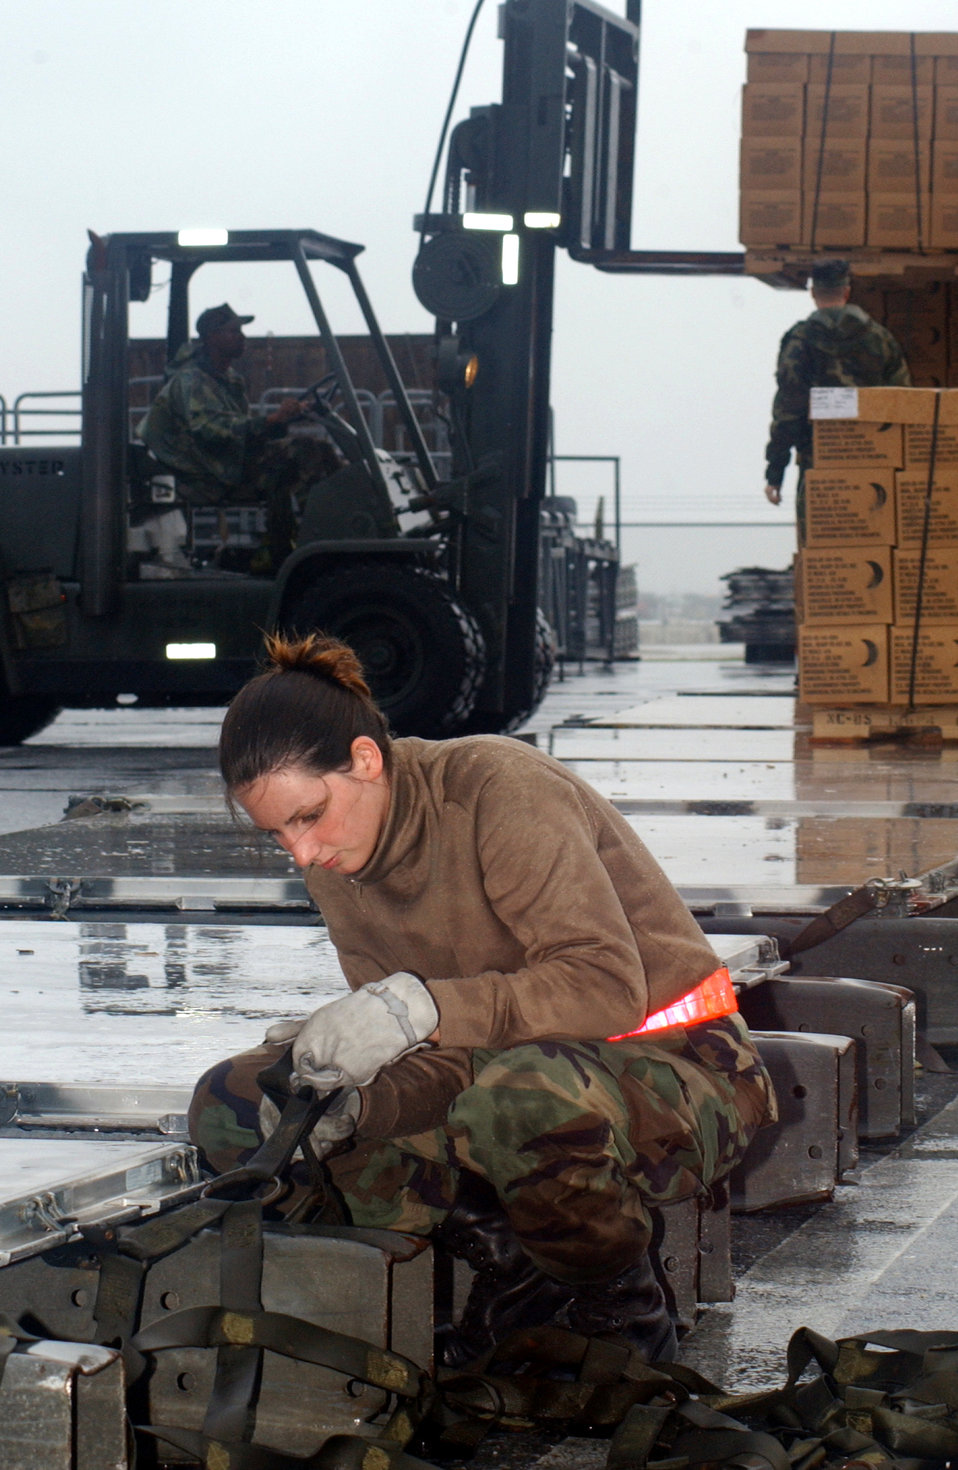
Airmen continue tsunami relief

KADENA AIR BASE, Japan -- Airman 1st Class Sara McClaskey readies a cargo net on an aircraft pallet bound for Southeast Asia. Airmen from the 18th Wing here are providing supplies to help with the humanitarian effort in the area devastated by a 9.0 magnitude earthquake Dec. 26 off the coast of Indonesia. The quake caused tsunami waves that killed at least 70,000 people in 12 countries. More than 3,000 cases of packaged meals and four aircraft pallets of fresh water were processed through Kadena's cargo area Dec. 28. Three KC-135 Stratotankers from here also are slated to support relief efforts in Sri Lanka. Airman McClaskey is assigned to the 733rd Air Mobility Squadron.